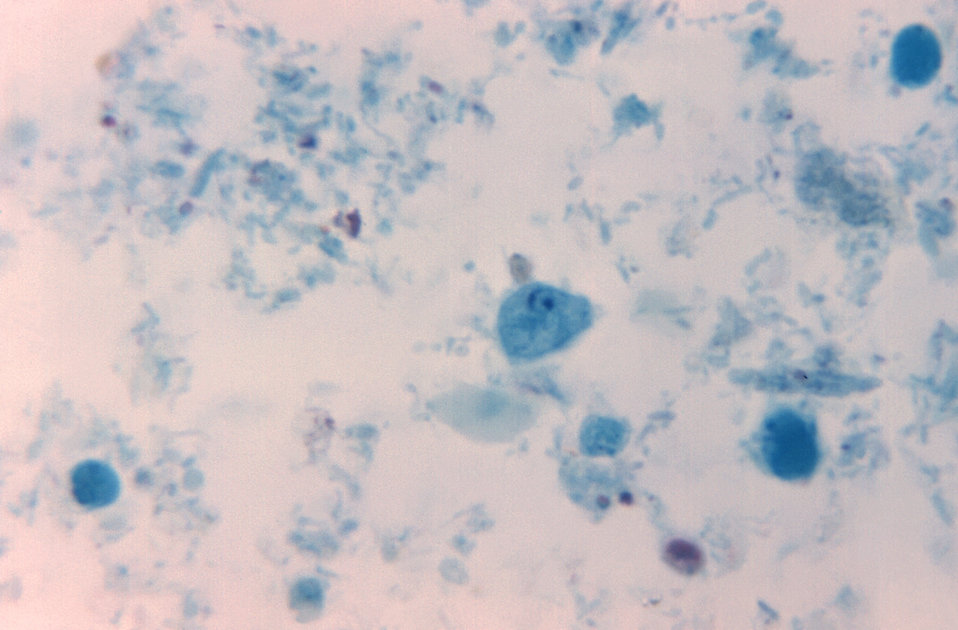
Magnified 1000X, this trichrome-stained photomicrograph revealed the presence of an atypical Endolimax nana amoebic trophozoite. In this case, along with its single karyosome, this atypical trophozoite displays a nucleus that also contained an eccentrically-placed peripheral chromatin crescent.